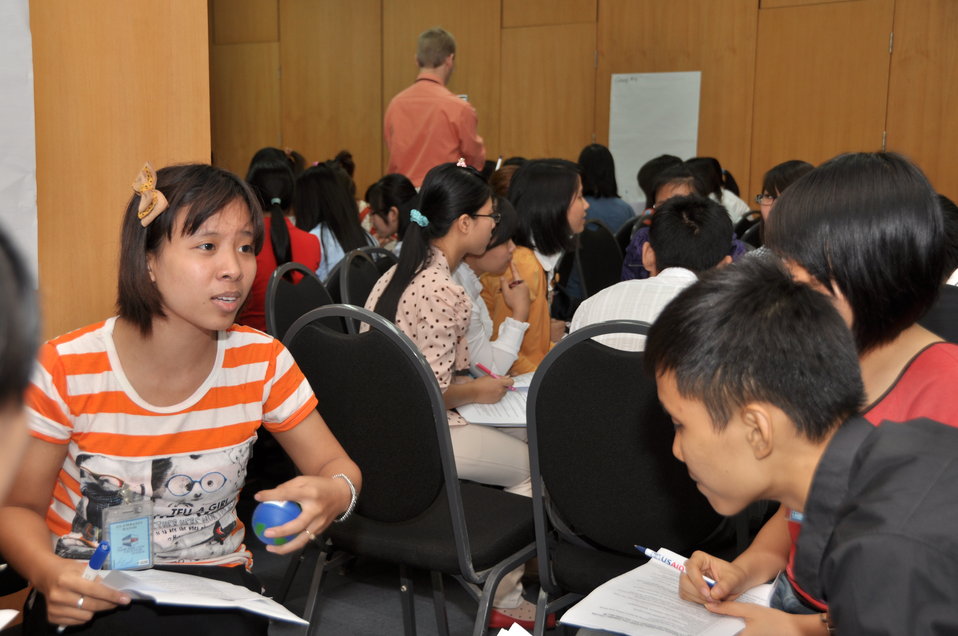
Vietnamese university students join the Business Plan Mashup exercise

Photo: @USAIDVietnam, November 16, 2012